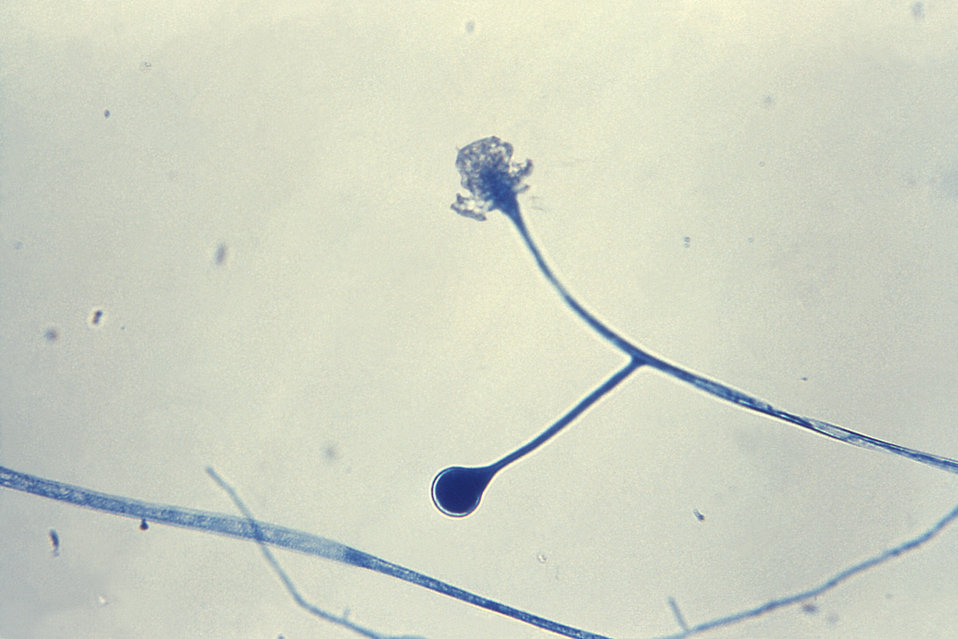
Under a magnification of 200x, and using a lactophenol cotton blue mount fixation technique, this photomicrograph reveals some of the ultrastructural morphology exhibited by a Mucor sp. fungal organism. This image depicts two sporangia, a mature structure, which had ruptured, releasing its contents of spores (above), and a developing sporangium (below).